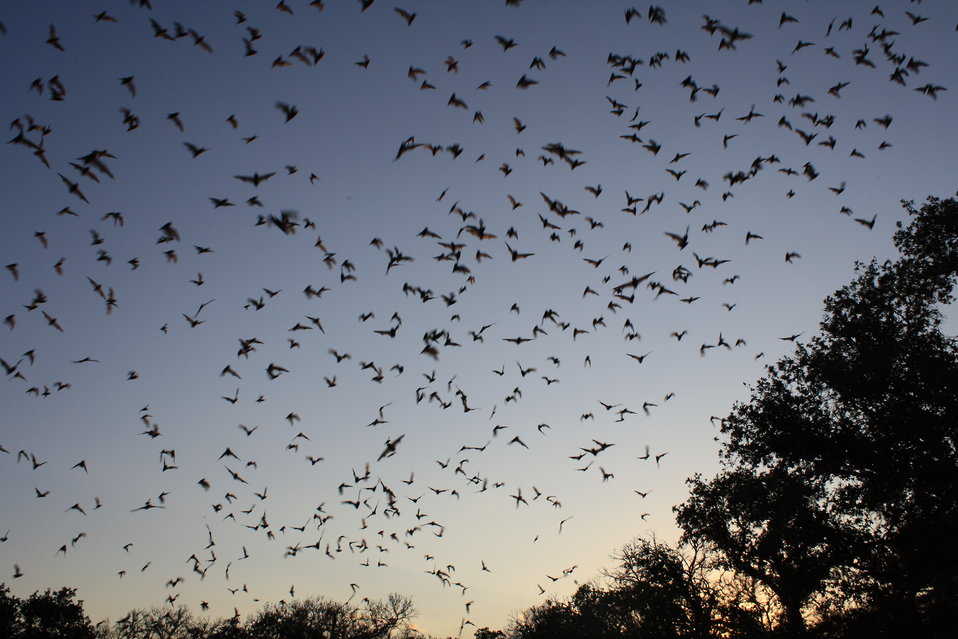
Mexican free-tailed bats exiting Bracken Bat Cave